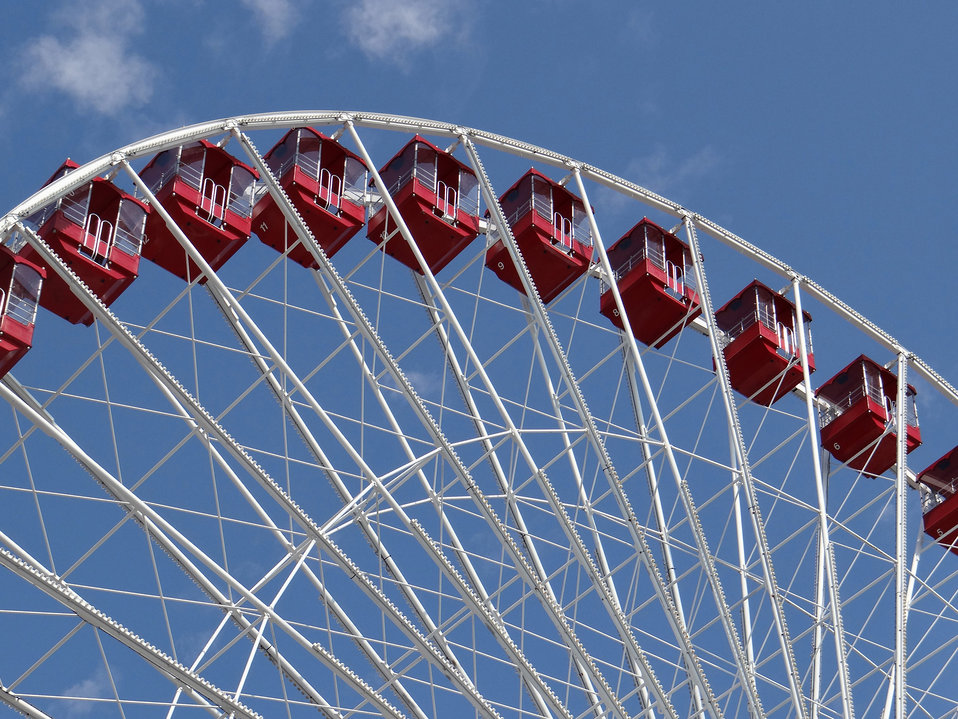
Away we go!

Partial view of ferris wheel 150 feet up..